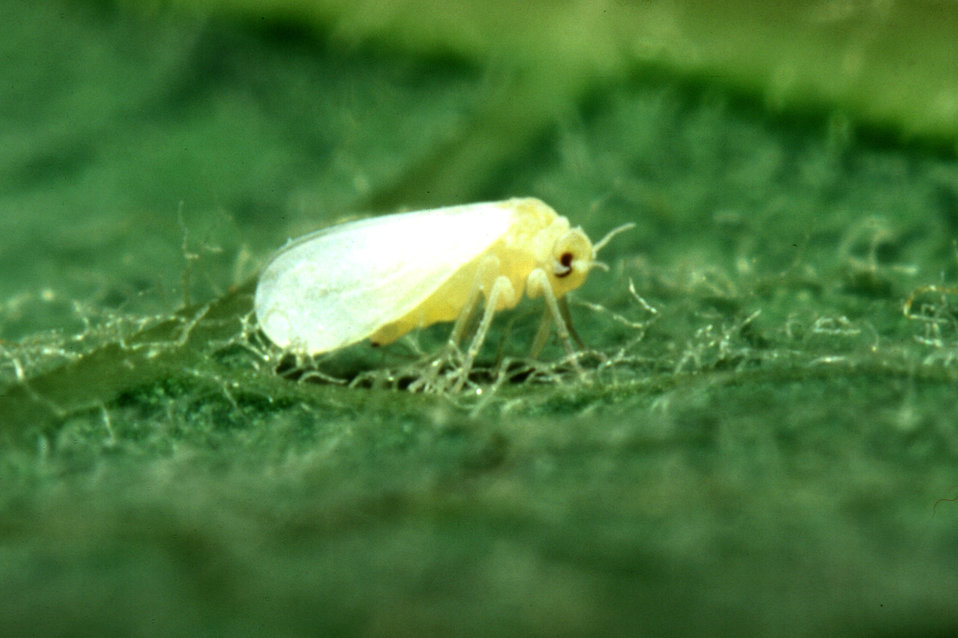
A Sweetpotato whitefly (also known as the Silverleaf whitefly) and is a serious agricultural pest and is considered an invasive species. The whitefly feeds on agricultural crops such as tomatoes, squash, broccoli, cauliflower, cabbage, melons, cotton, carrots, sweet potato, cucumber, and pumpkin, and ornamental plants such as poinsettia, crepe myrtle, garden roses, lantana, and lilies. The whitefly was first found in the United States in poinsettia crops in Florida during the mid-1980s. It was found to have moved to tomatoes, other fruit and vegetable crops less than a year later and within five years had caused over $100 million in damage to the Texas and California agriculture industries.